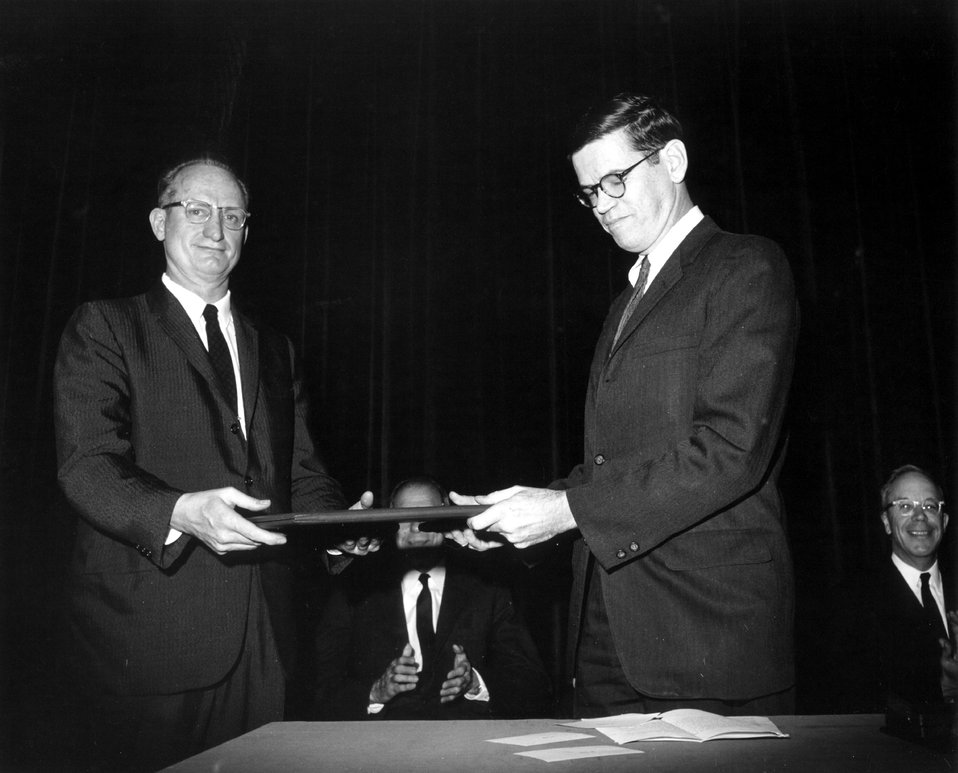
Mr. Palfrey, Dr. Rainwater. ERNEST O. LAWRENCE AWARD - 1963. National Academy of Sciences, April 25, 1963.